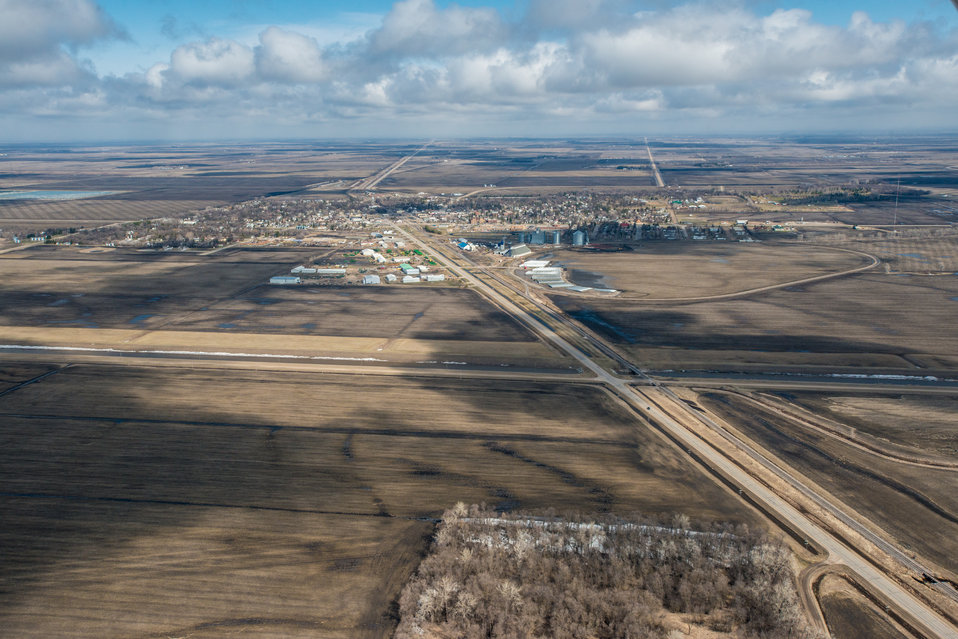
Snake River Diversion, a Public Law PL83-566 Small Watershed Program, at Warren, MN, on Wednesday, May 1, 2013. For information about this and other programs from the USDA Red River Basin Initiative (RRBI) please see www.mn.nrcs.usda.gov/news/features13/RRBI.html.